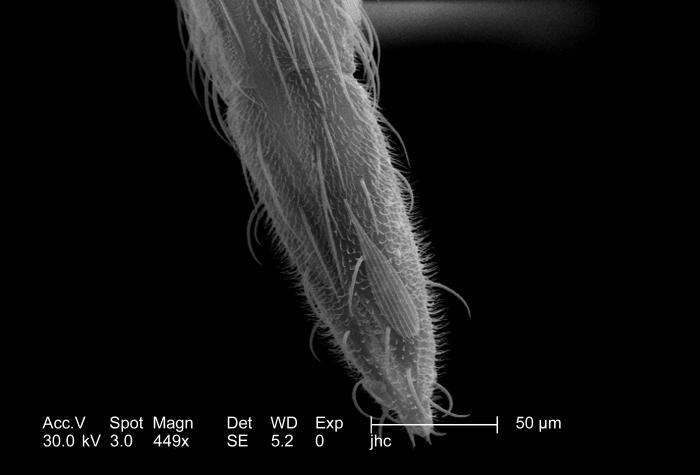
At a magnification of 449x, this scanning electron micrograph (SEM) revealed some of the morphologic features displayed on the distal tip of an Anopheles gambiae mosquito's "labellum". The labellum is the tip of the ensheathed proboscis, which retracts as the sharp stylets contained within pierce the host's skin surface, as the insect obtains its blood meal.